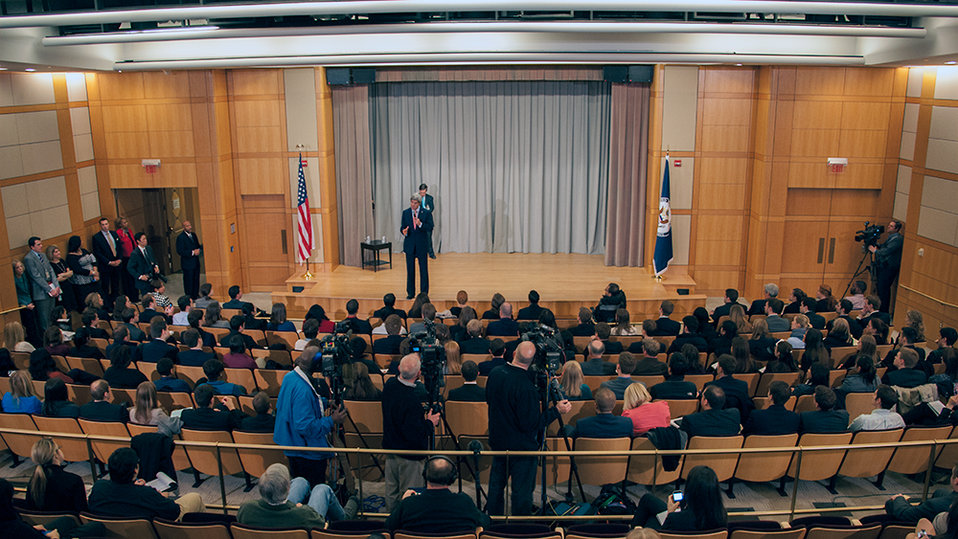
Secretary Kerry Engages Students at a Foreign Policy Classroom

U.S. Secretary of State John Kerry speaks at a Foreign Policy Classroom, a Bureau of Public Affairs outreach program which brings college students from U.S. universities to the Department to hear from subject-matter experts on foreign policy topics, at the U.S. Department of State in Washington, D.C., February 7, 2013.